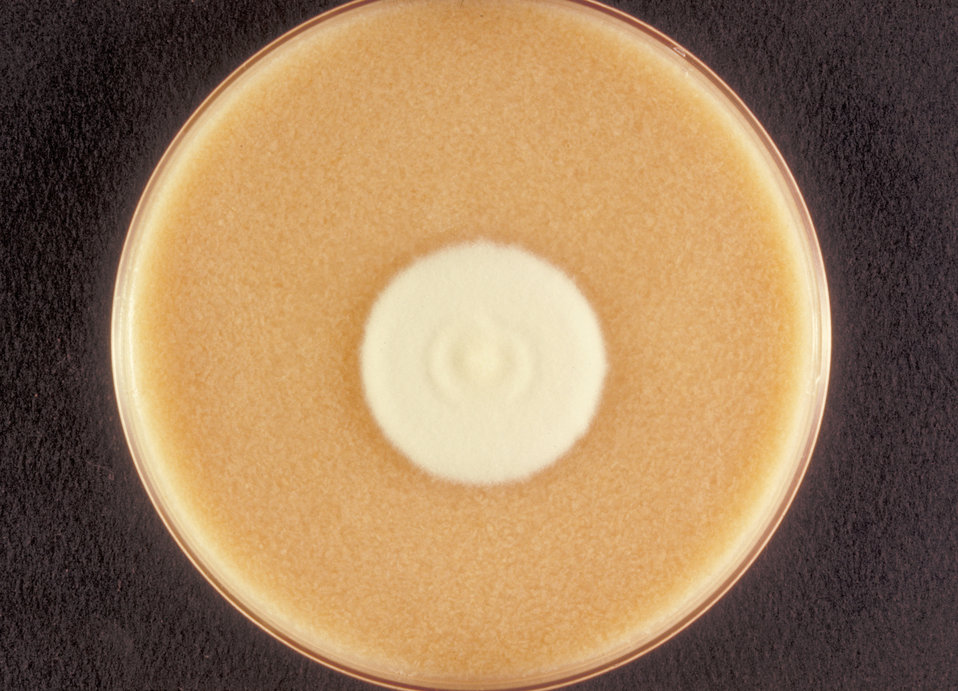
This is a top view of a cereal agar plate culture growing the fungus Microsporum persicolor.